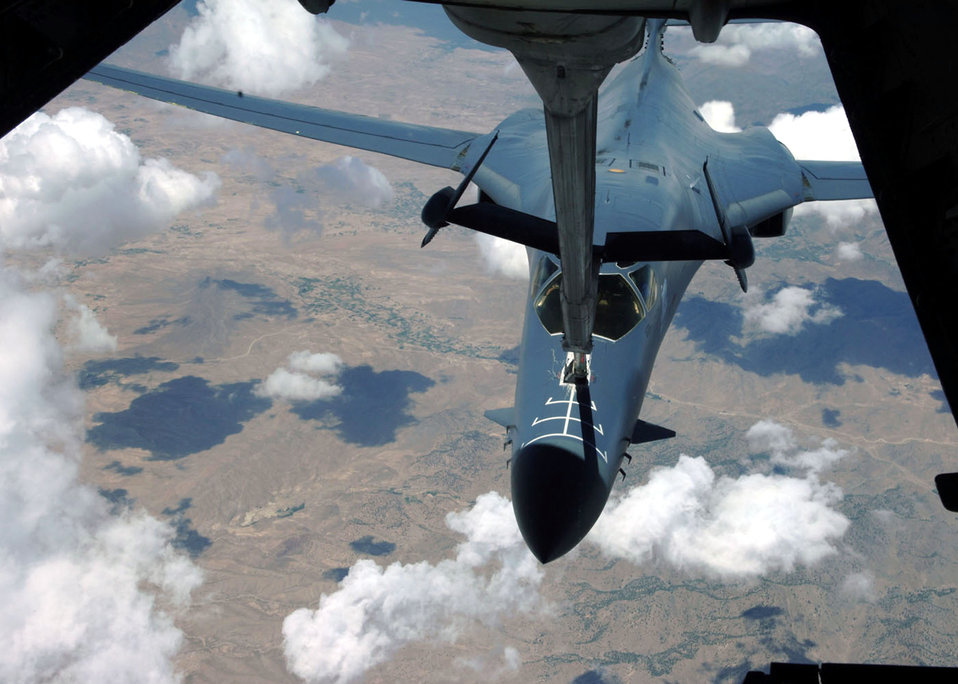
Gassed up

A KC-10 Extender refuels a B-1B Lancer Aug. 11 over Afghanistan in support of Operation Enduring Freedom. This was the KC-10 crew's final flight of their deployment before heading back to McGuire Air Force Base, N.J.